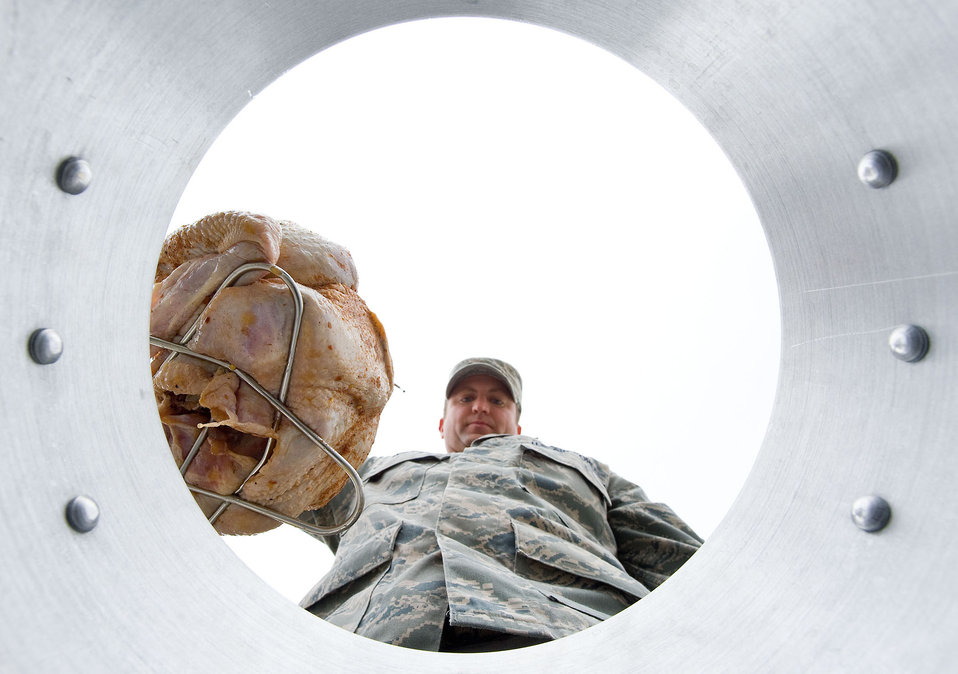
Gobble Gobble

Master Sgt. John Willard lowers a turkey into a turkey fryer at Dover Air Force Base, Del., Nov. 16, 2012. Fires caused by improper usage of turkey fryers are one of the top causes for home fires during the holiday season. Willard is the NCO in charge of flight safety with the 436th Airlift Wing Safety Office.